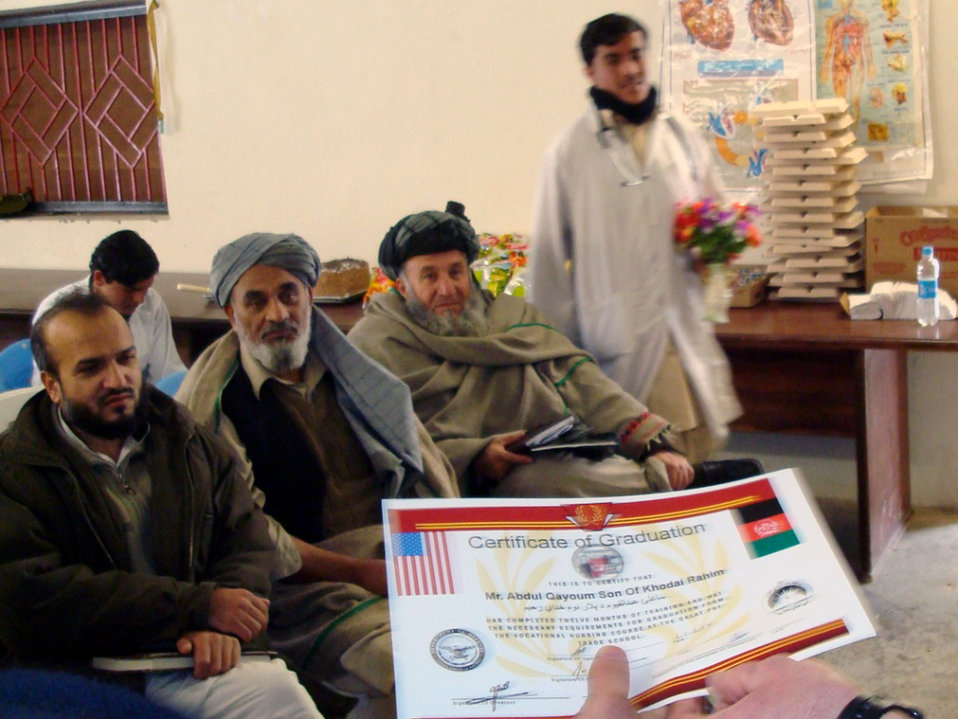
Afghans complete advanced medical training

A graduate of the basic nursing program here hurries to the front of the room to accept his certificate of completion Feb. 5 as three dignitaries from Zabul Province look on. The graduation ceremony was attended by (l to r) Director of Public Health Dr. Nazir Ahmadzai, Director of Education Mr. Abdul Nabi Wadan and Director of Ibn Sina Medical Dr. Fazul Rahman. The 12-month training program-facilitated by the joint Air Force and Army Provincial Reconstruction Team-teaches students the basics of nursing: taking vital signs, assessing overall health, initial patient screening, medical terminology and an overview of medications. The course is taught by a local Afghan employed by the PRT.